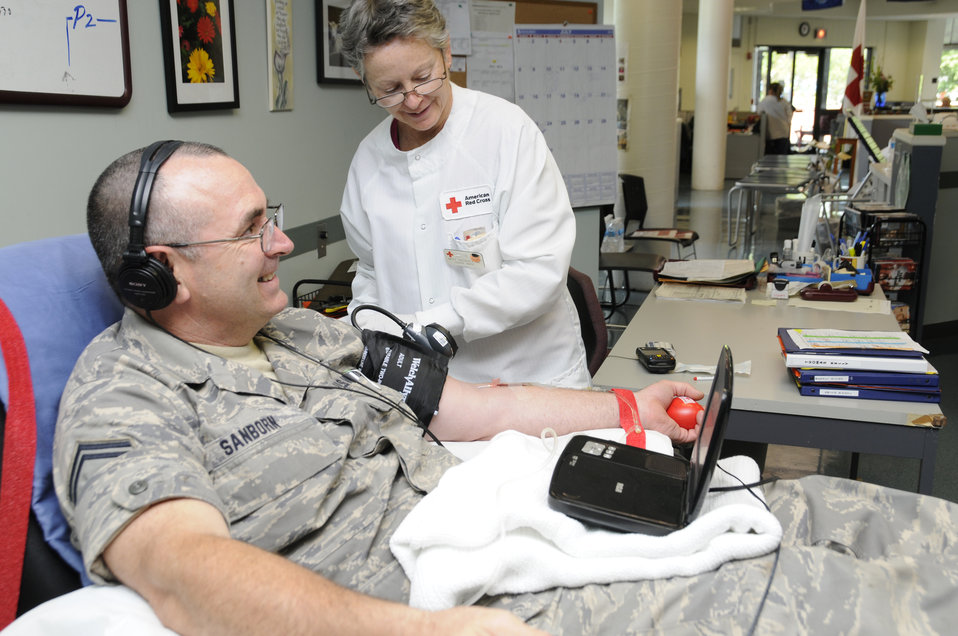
VTANG Airman donates platelets

Senior Master Sgt. Craig Sanborn prepares to donate platelets at the American Red Cross Center in Burlington, Vt., July 18, 2012. He donates platelets every three weeks.